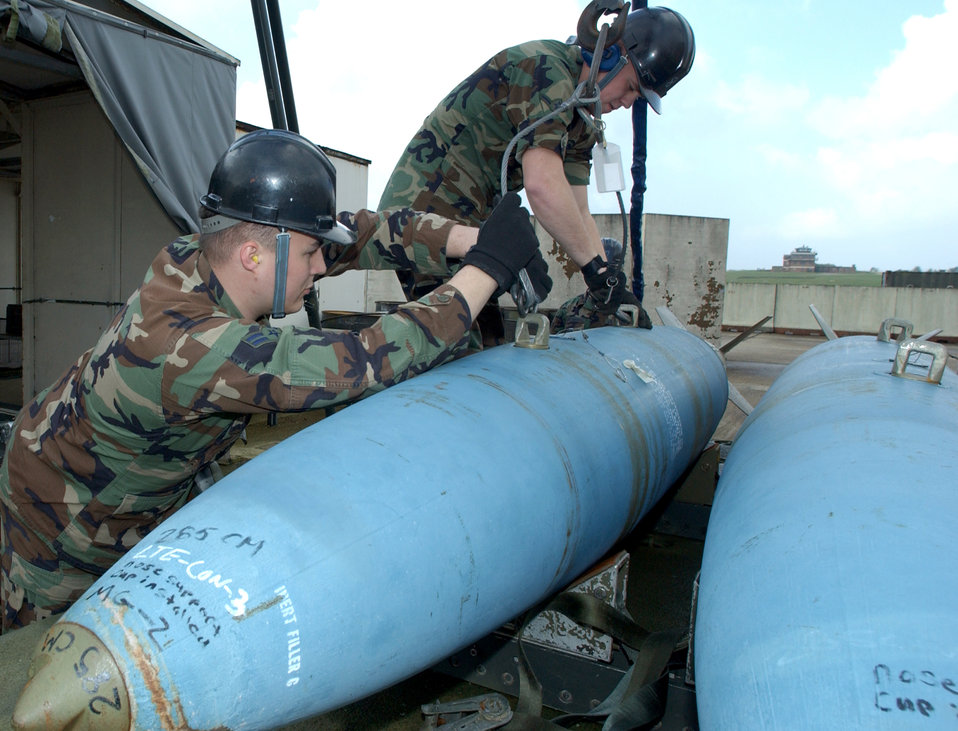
Big bad bomb

ROYAL AIR FORCE LAKENHEATH, England -- Airman 1st Class Michael Lundin (left) and Airman William Sword get ready to move a bomb here April 13. Both Airmen are conventional maintenance crewmembers with the 48th Munitions Squadron. The squadron provides munitions and armament systems maintenance for one F-15 Eagle and two F-15E Strike Eagle fighter squadrons.